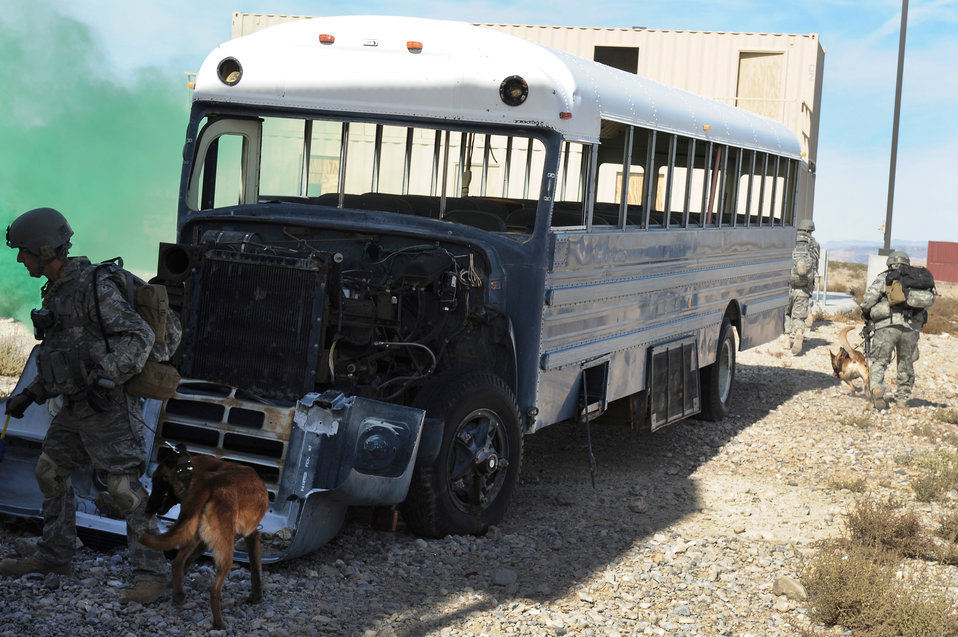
Nellis AFB selected to host new joint MWD training program

Staff Sgt. Ryan Stocklin and his military working dog Akim move around an abandoned bus during a training exercise Oct. 29, 2010, at the Nevada Test and Training Range. The training exercise is part of a new Nellis Air Force Base, Nev., program created to condense the current 80 day training curriculum for handlers and MWDs. Sergeant Stocklin is assigned to the 628th Security Forces Squadron at Charleston Air Force Base, S.C.